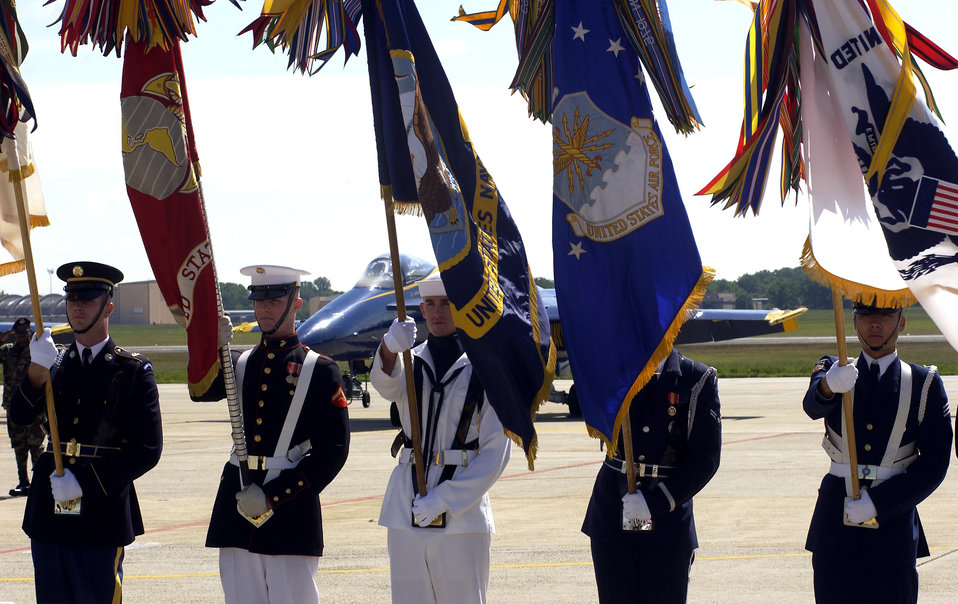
2006 Joint Service Open House

A joint service color guard prepares to post the colors during the opening ceremony of the 56th annual Department of Defense 2006 Joint Service Open House at Andrews Air Force Base, Md., on Friday, May 19, 2006. The three-day event highlighted American aviators, aircraft and technology.